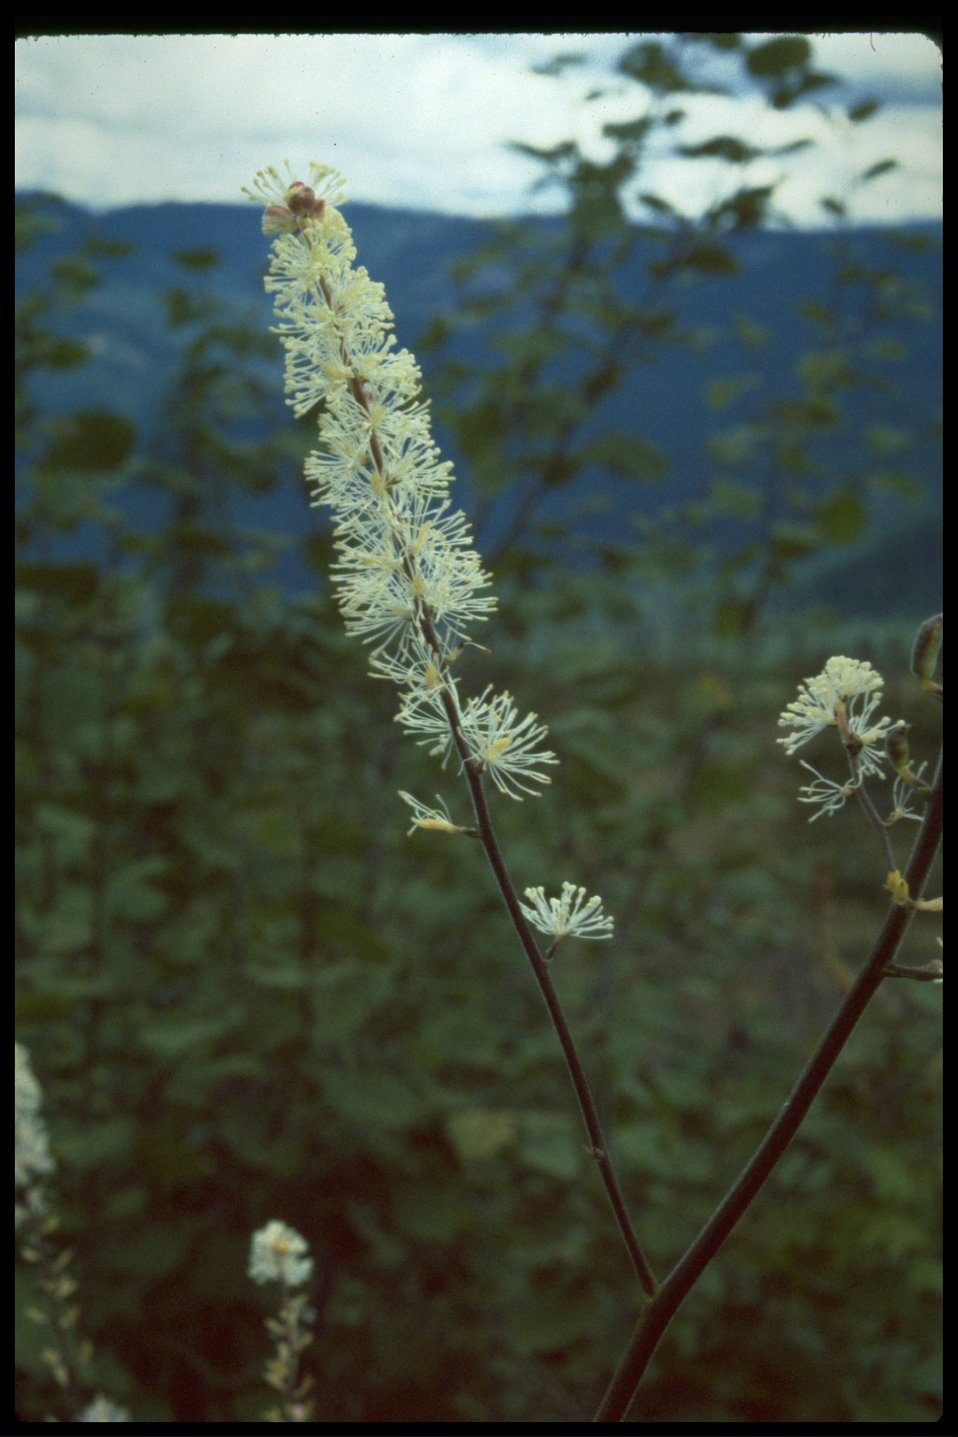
Medium shot of tall bugbane (Cimicifuga elata).